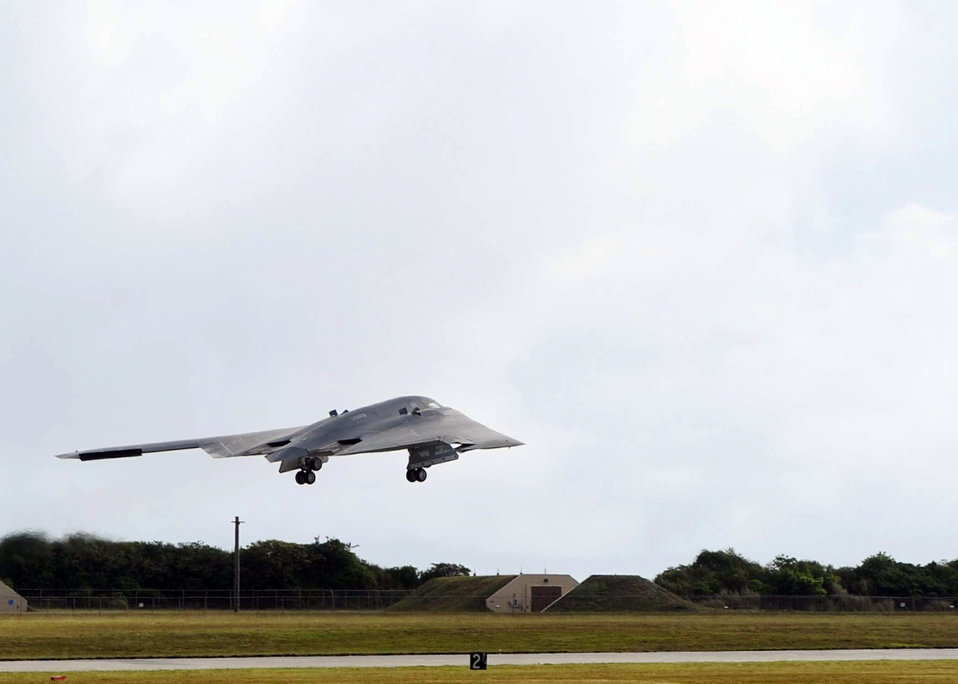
Barksdale bombers arrive at Andersen

A B-2 Spirit takes off from Andersen Air Force Base, Guam, as part of the redeployment June 2 to Whiteman Air Force Base, Mo. B-52 Stratofortresses replaced the B-2s as part of the continuous bomber presence in the Western Pacific.